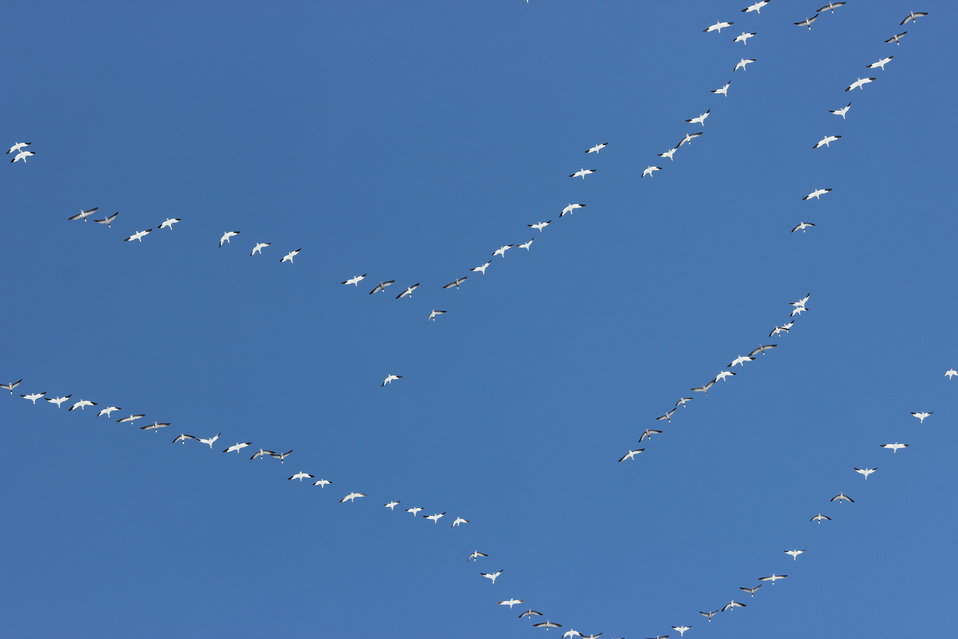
Blue and White

These snow geese are migrating to their breeding and nesting grounds in northern Canada and Alaska for the summer. The darker ones are a color phase often referred to as the 'blue goose'.